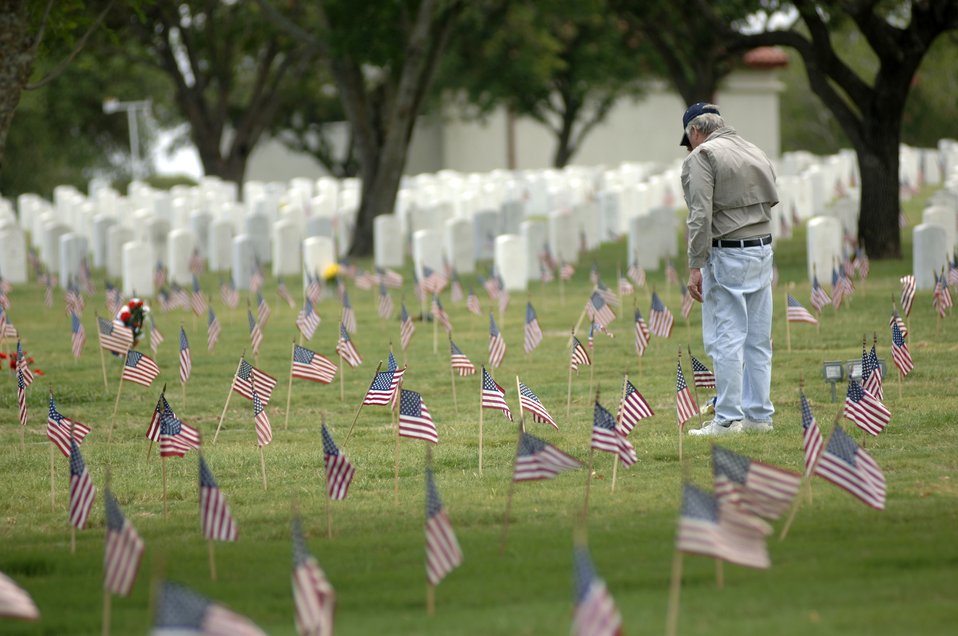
Memorial Day observances

John Campbell pays his respects at a grave site at Fort Sam Houston National Cemetery in San Antonio on Sunday, May 28, 2006.